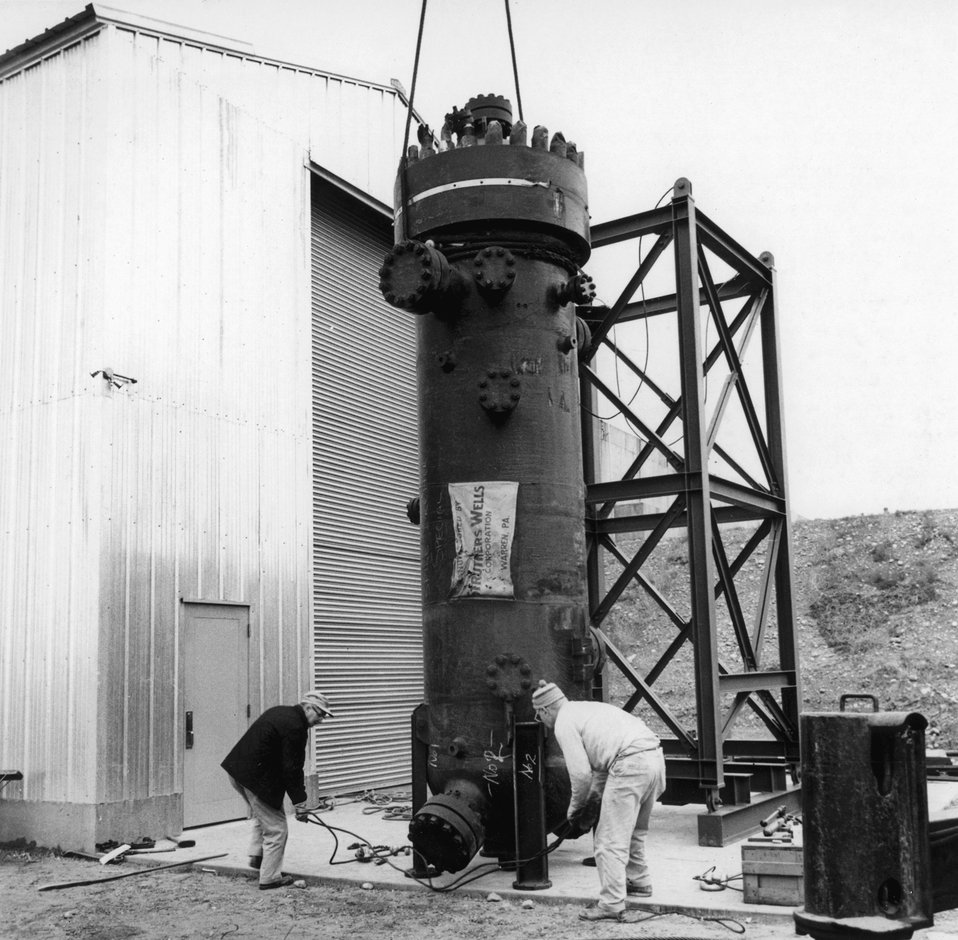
Pacific Northwest Laboratory (PNL) research on the behavior coolant water during a programmed 'accident'. c. 1974